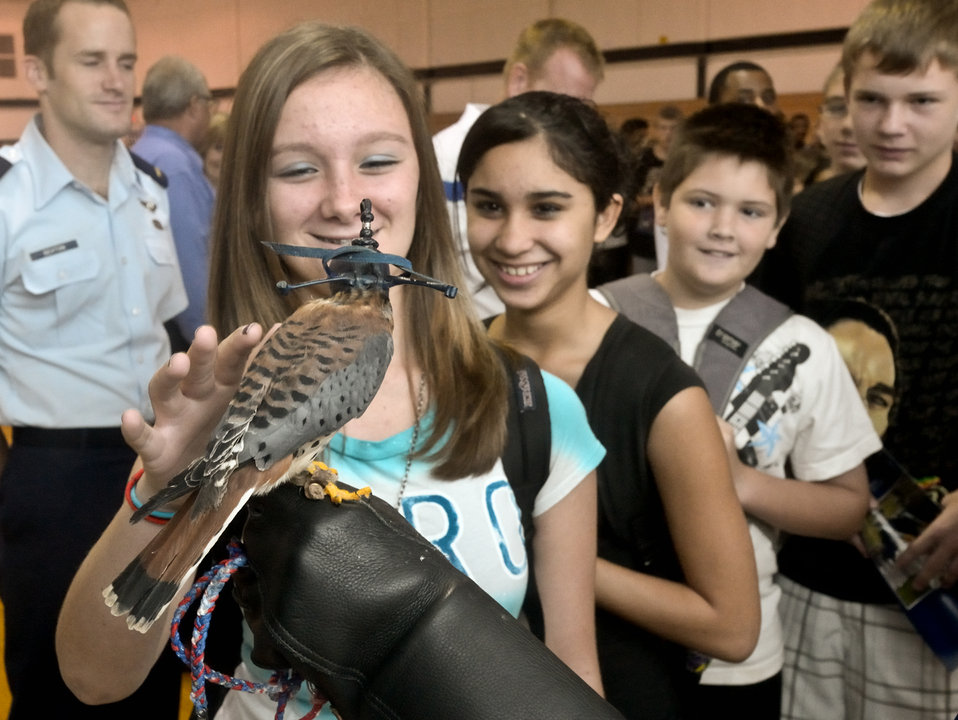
Small kestral captures school's attention

Students were able to individually meet Cadet 3rd Class Danielle Cortez and